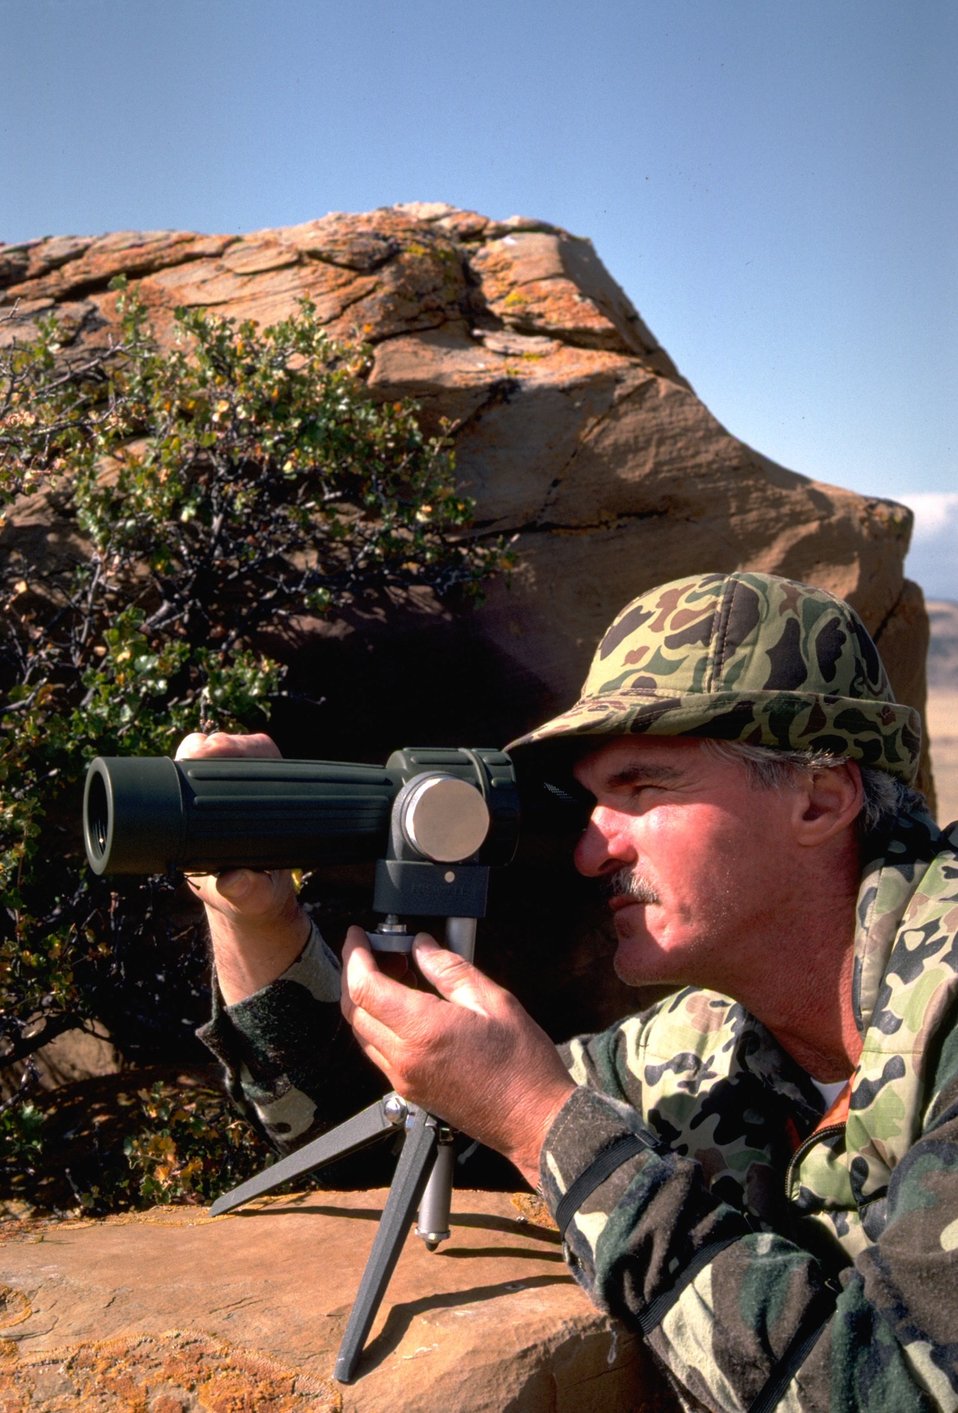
Hunter with scope